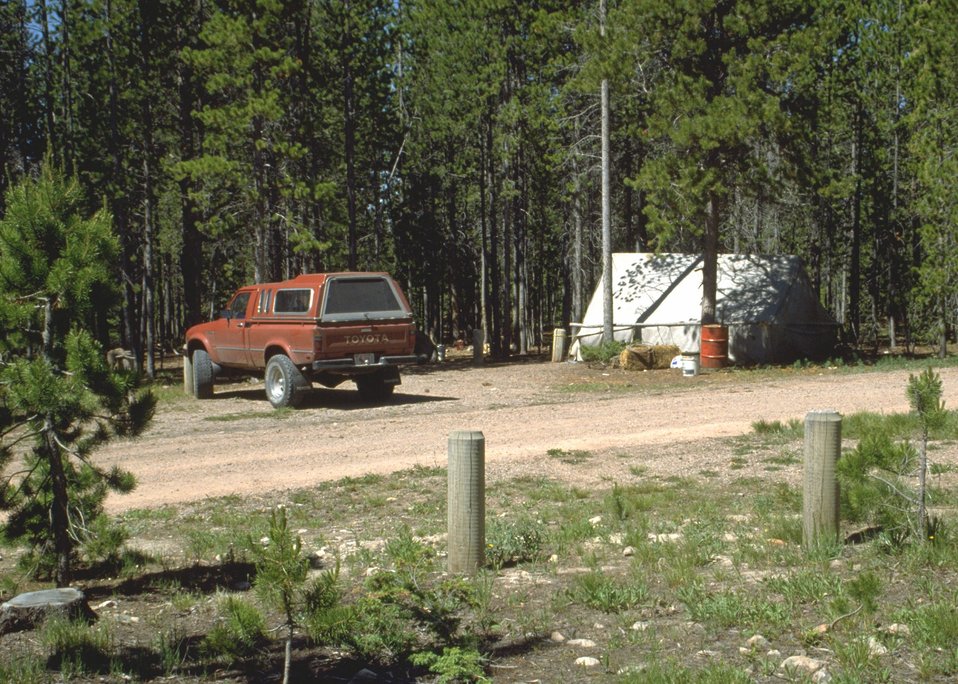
Unknown picnic area.